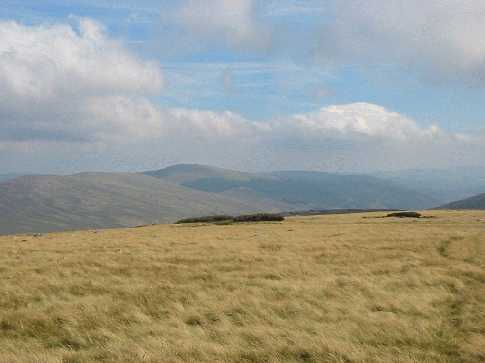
en:Camenabologue, en:Wicklow Mountains, en:Ireland.